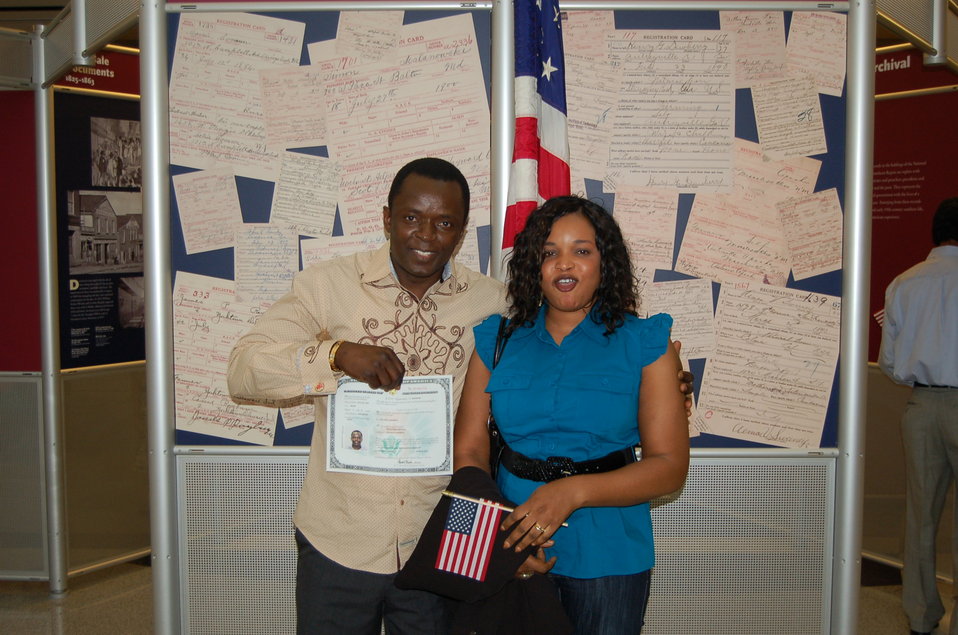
New Citizens